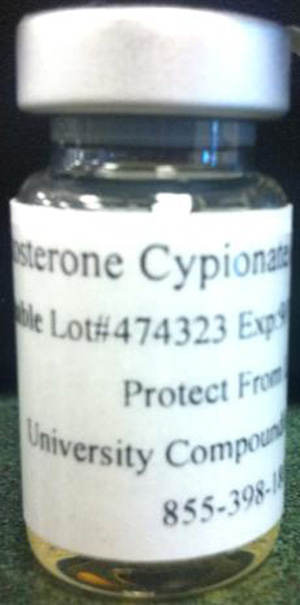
RECALLED – Testosterone Cypionate (Sesame Oil), Testosterone Cypionate/Testosterone Proprionate, PGE-1 NS, more

September 6, 2013 – Product Recall – University Compounding Pharmacy Initiates a Nationwide Voluntary Recall of Certain Pharmacy Products due to Lack of Assurance of Sterility Concerns
.